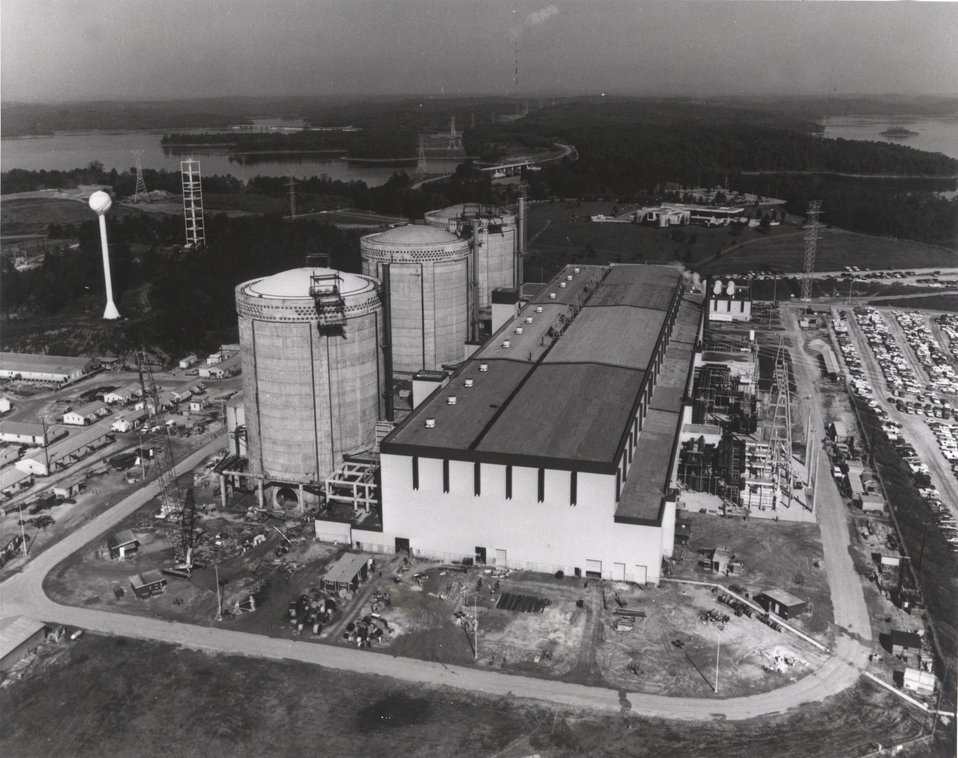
OCONEE...Aerial view of the Duke Power Company's Oconee Nuclear Station at Seneca, South Carolina. Circa 1974.